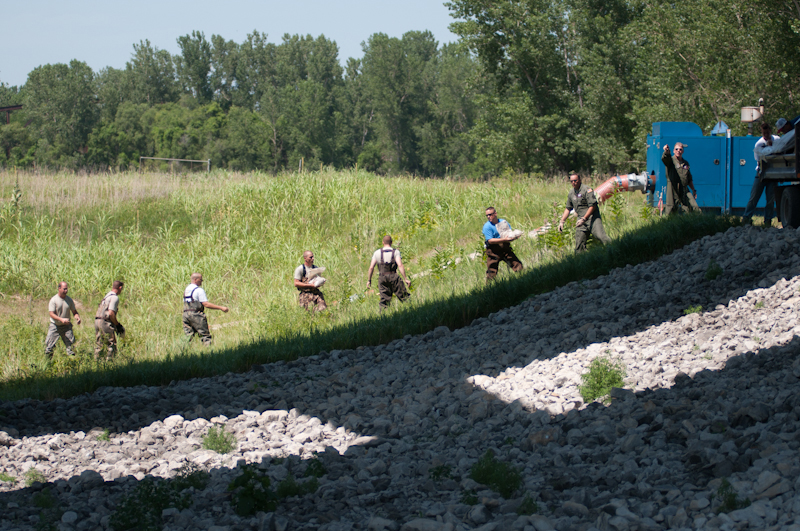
Air Guardsmen fight flood

Airmen from the Missouri Air National Guard's 139th Airlift Wing in St. Joseph, Mo., form a line to pass sandbags to fellow Airmen June 30, 2011, in an effort to fight rising flood waters near Elwood, Kan.